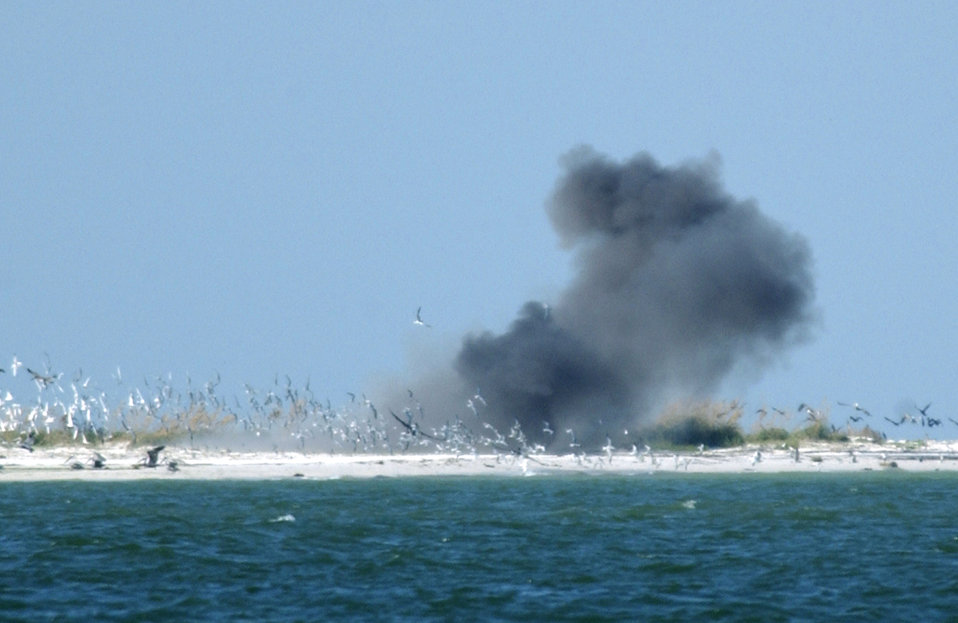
Airmen explode bomb found on Florida beach

PASSAGE KEY ISLAND, Fla. -- Airmen from the explosive ordnance disposal team at nearby MacDill Air Force Base destroy a World War II-era M46 photoflash bomb Oct. 13 found on the beach here. The team exploded the old bomb after they decided it was too sensitive to move.